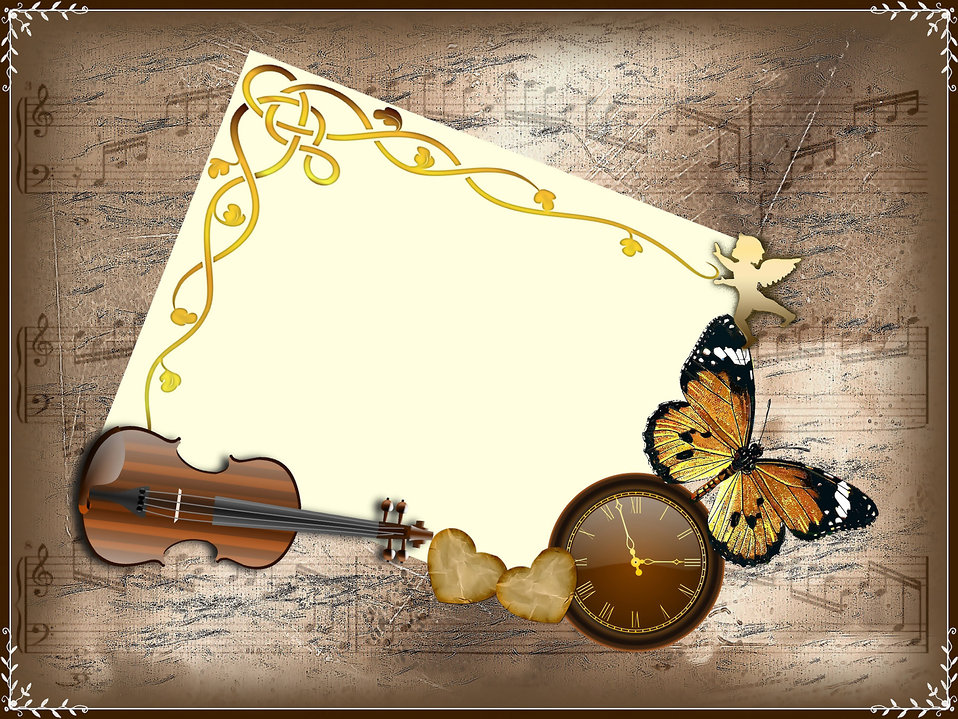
Background 356

Card background paper letter.